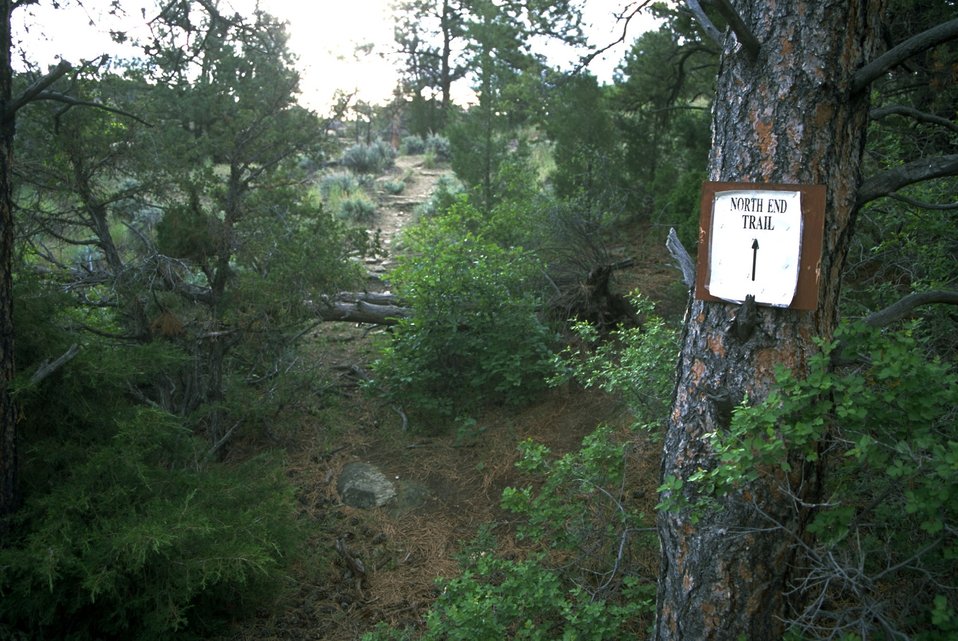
The North End Trail in the Four Dances Natural Area